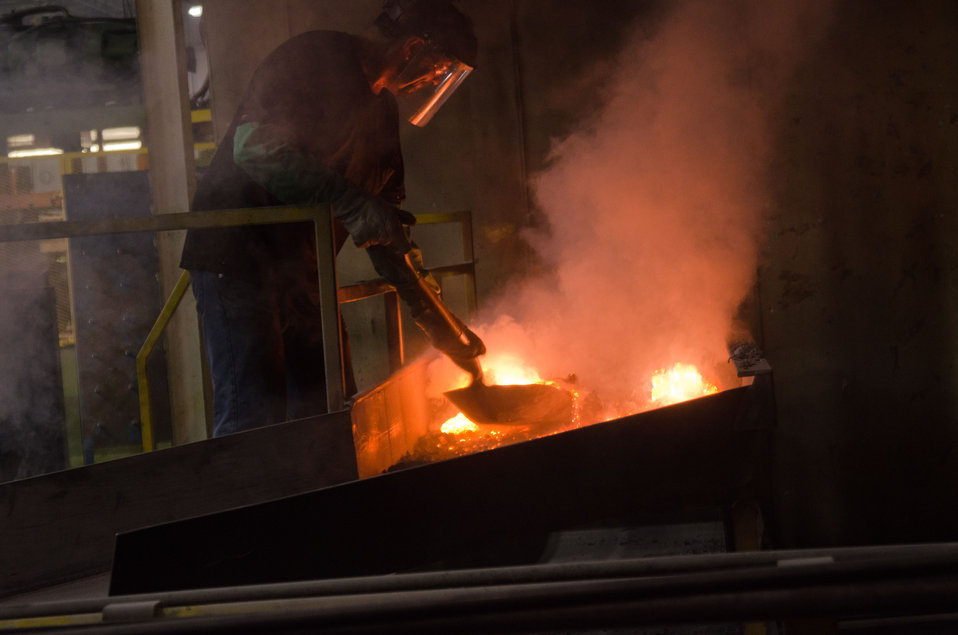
Melter operator Carl Welborn faces flames and intense heat to forklift foundry ingots into; and shovels slag out of a furnace crucible at Port City Group’s Port City Castings Corporation, manufacturer of high-pressure aluminum die-castings, mostly for the automotive industry, in Muskegon, MI, facility on Wednesday July 20, 2011. Port City Group boosted its employment by 12 percent over last year thanks to two Rural Business Guaranteed Loans totaling $9.6 million. In its 80,000 sq. ft. facility, machines that range from 800 – 1,600 tons, and cast A380 aluminum alloy products from melted ingots of aluminum, into automotive components of U.S.A. made vehicles. The process features a variety of robotic presses; computer controlled machining; quality control facility; and complete measurement and testing laboratory. In 2009 banks were backing out of loans for PCG equipment purchase agreements. The U.S. Department of Agriculture (USDA) loan guarantee helped make the loan possible with its guarantee. PCG obtained the needed robotic and other equipment. This resulted in a stable workforce that has since grown. When asked about their USDA experience, Port City Group Sales Manager Laura LaGuire said, “It was great! They were very helpful. Everything that came up was handled smoothly, the money came in place when it was needed, and it was a very smooth transition.”